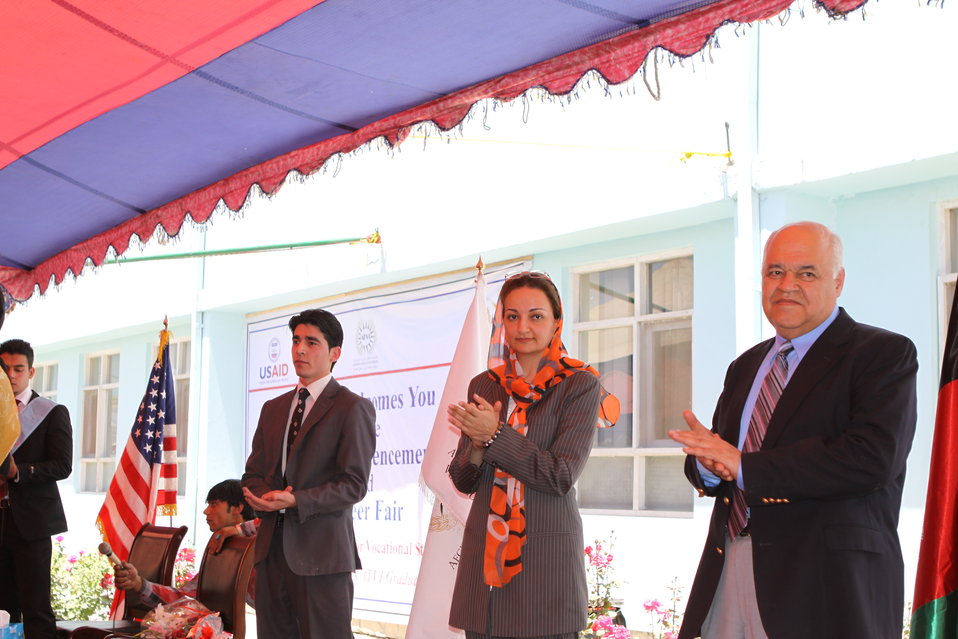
100522 ATVI Graduation 124